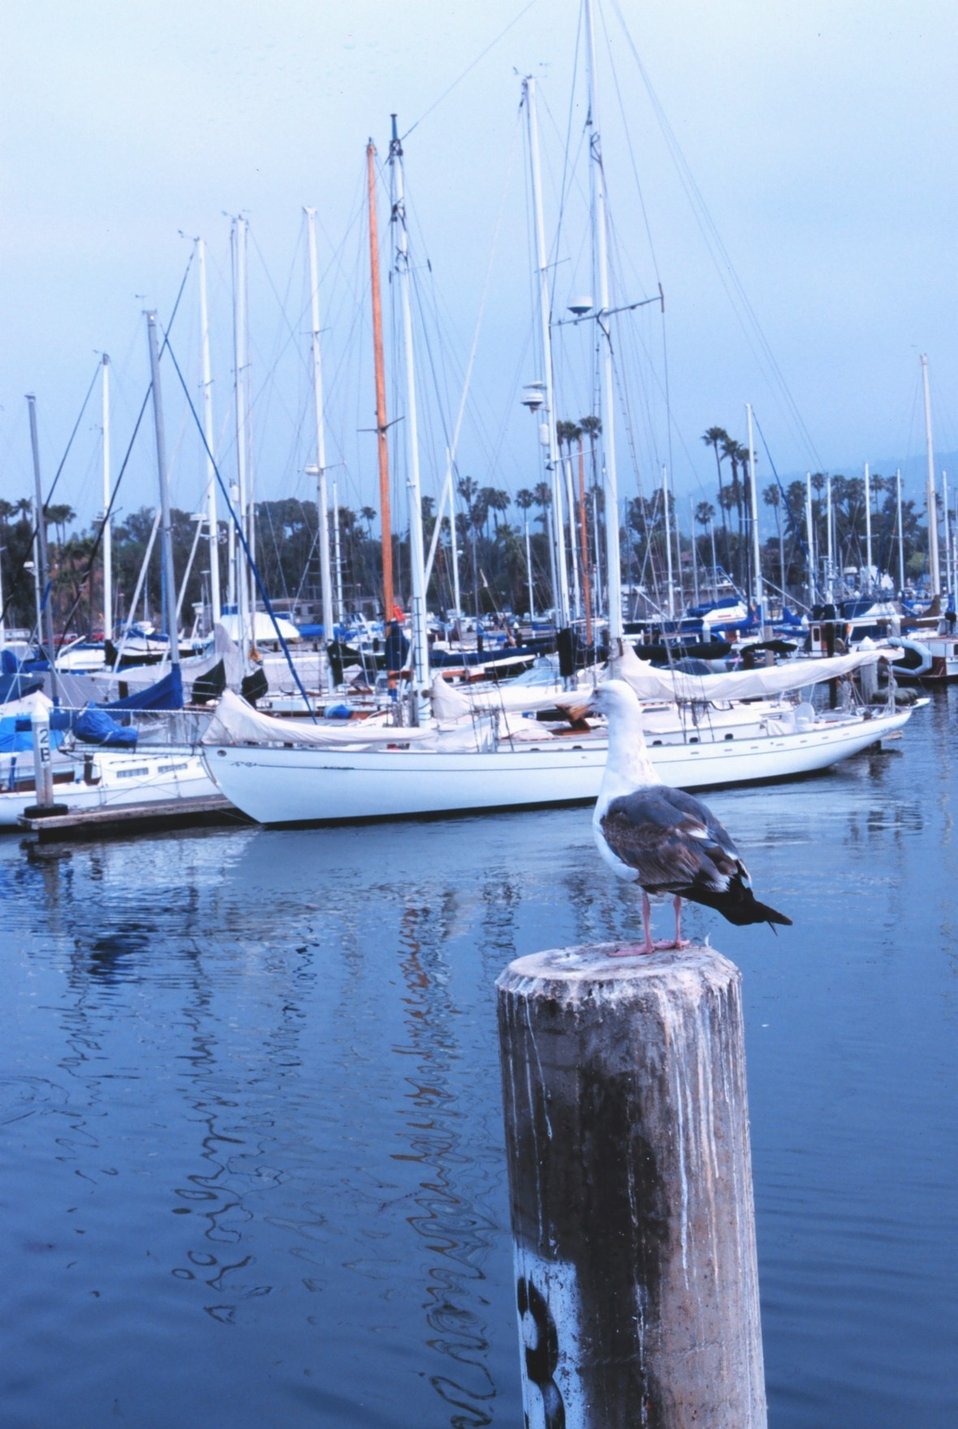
The harbor at Santa Barbara